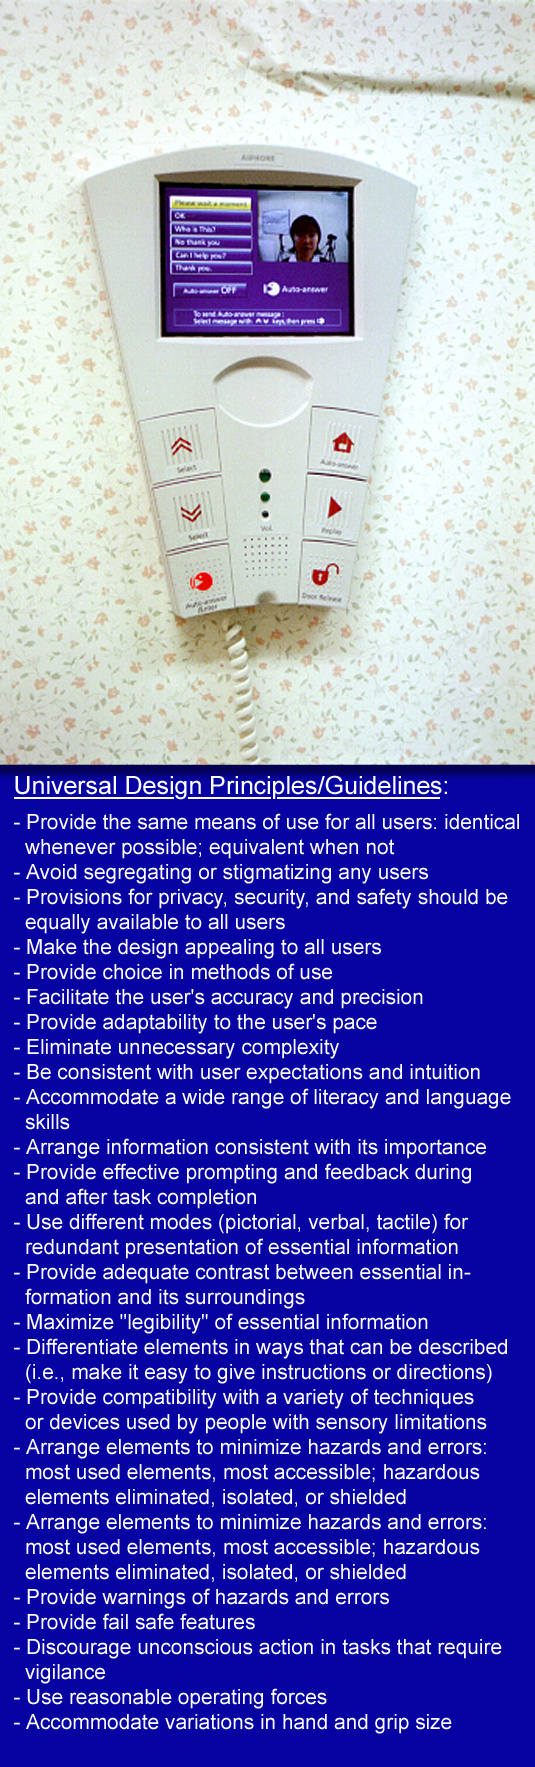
PHIL# 9108 - 9112 depicted the Aiphone� Universal Video Entry System, a prototypical video phone designed to allow residents to identify visitors before granting entrance, and to allow them to monitor communication without having to go to the master station should moving be slow, difficult, or undesirable at that time. The system's features include visual, tactile, and audible feedback offering an unusually high degree of redundancy in conveying information, while its Video Entry System offers security and convenience to all users, especially those who live alone.By moving the cursor key, then pushing the Auto-Answer button, a resident may select a message from the monitor's prerecorded message group to respond to visitors. This conveys the synthesized voice message to the visitor, a function extremely useful for someone who has difficulty speaking. If not at home, the system can video-record a visitor's image and voice, and later deliver a pre-selected audio message.